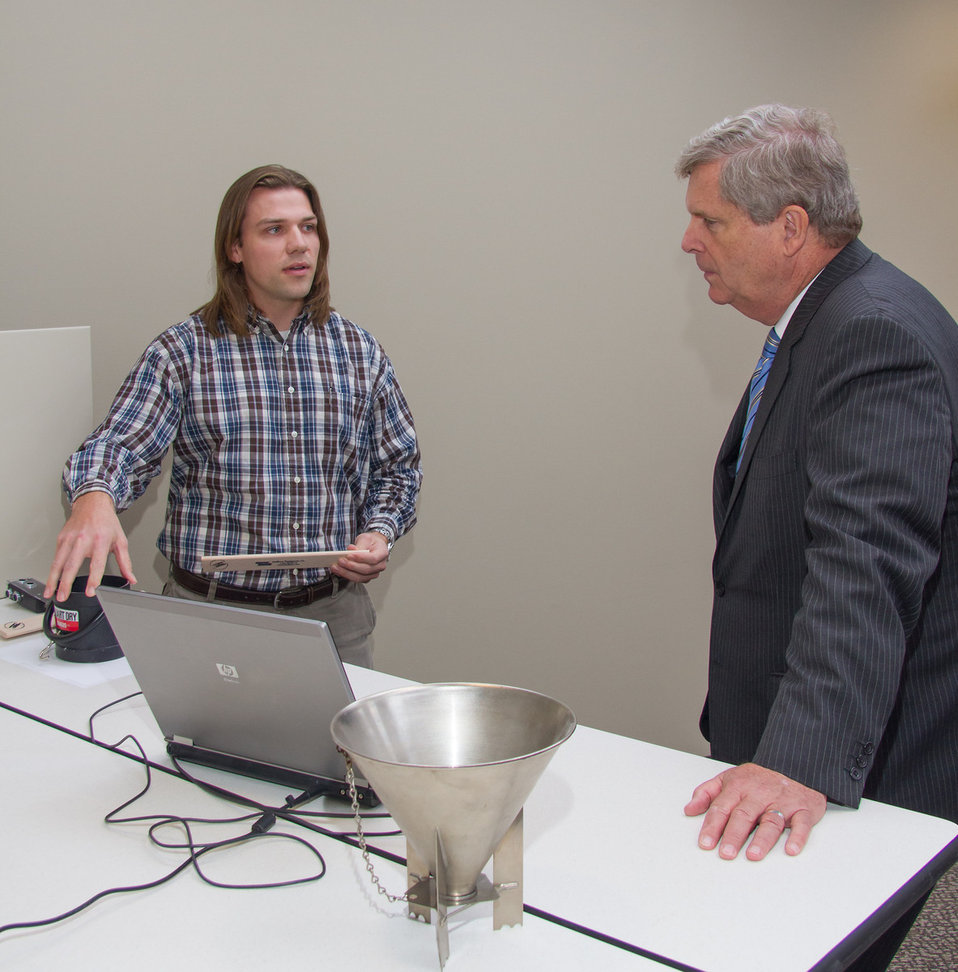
Jason Jordan, (l), Agricultural Engineer within Grain Inspection, Packers and Stockyards Administration (GIPSA), Inspection Instrumentation Branch, explains to Agriculture Secretary Tom Vilsak the significance of accurate grain test weight measurements and the new test weight trainer device that GIPSA has developed to enhance consistency of test weight measurements among official inspectors in Kansas City, MO, on Wednesday, Oct. 23, 2013.